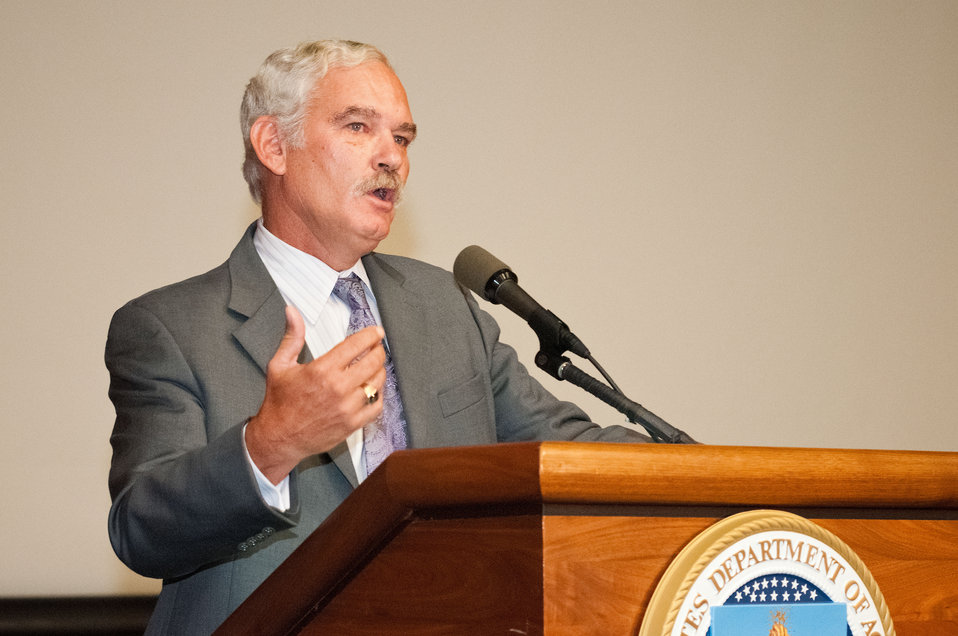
Agriculture Farm and Foreign Agricultural Services (FFAS) Under Secretary Michael Scuse, addresses the National Farmers Union at the U.S. Department of Agriculture (USDA) in Washington, D.C. on Monday, Sept. 10, 2012. Under Secretary Scuse discussed economics, exports and the 2012 Farm Bill.